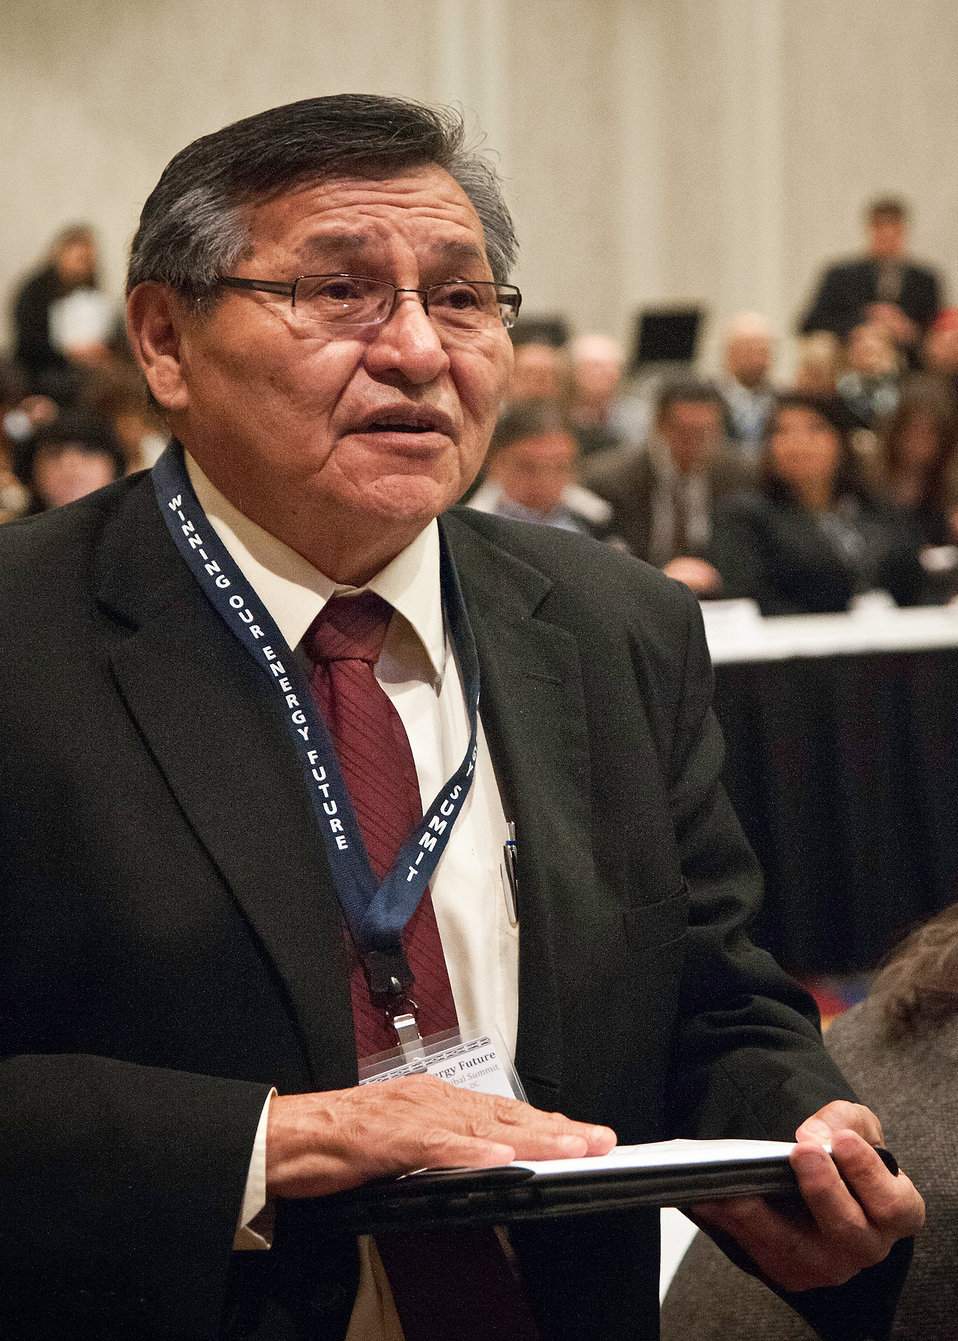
President of The Navajo Nation Ben Shelly had the opportunity to ask Agriculture Secretary Tom Vilsack a question during the United States Department of Energy (DOE) Tribal Summit with American Indian and Alaska Native Leaders in Washington, DC, on Wednesday, May 4, 2011. Secretary Vilsack discussed alternative energy, economic development and conservation programs available through the Department of Agriculture.